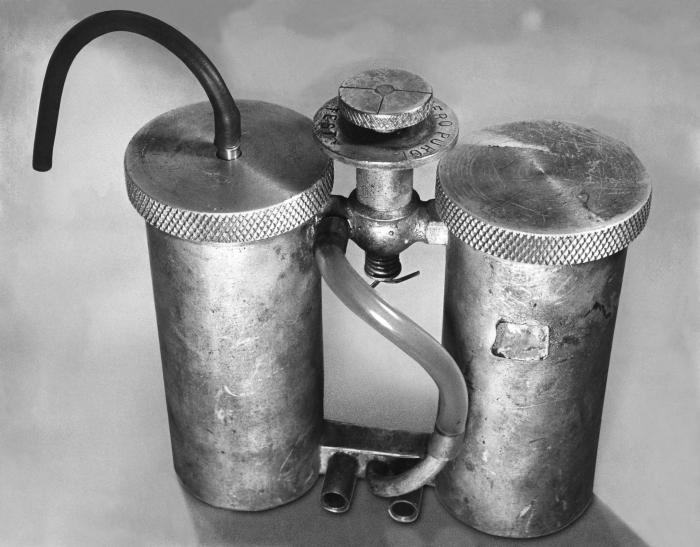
This historical photograph was provided by the Center for Disease Control's (CDC), National Institute for Occupational Safety and Health (NIOSH). Reprinted from an issue of 'Industrial Hygiene Newsletter, it depicted canisters configured to detect the presence of Benzoyl peroxide in the air. Benzoyl peroxide is used in consumer products, building materials, and furnishings and contributes to indoor air pollution, especially in the realm of industrial manufacturing.